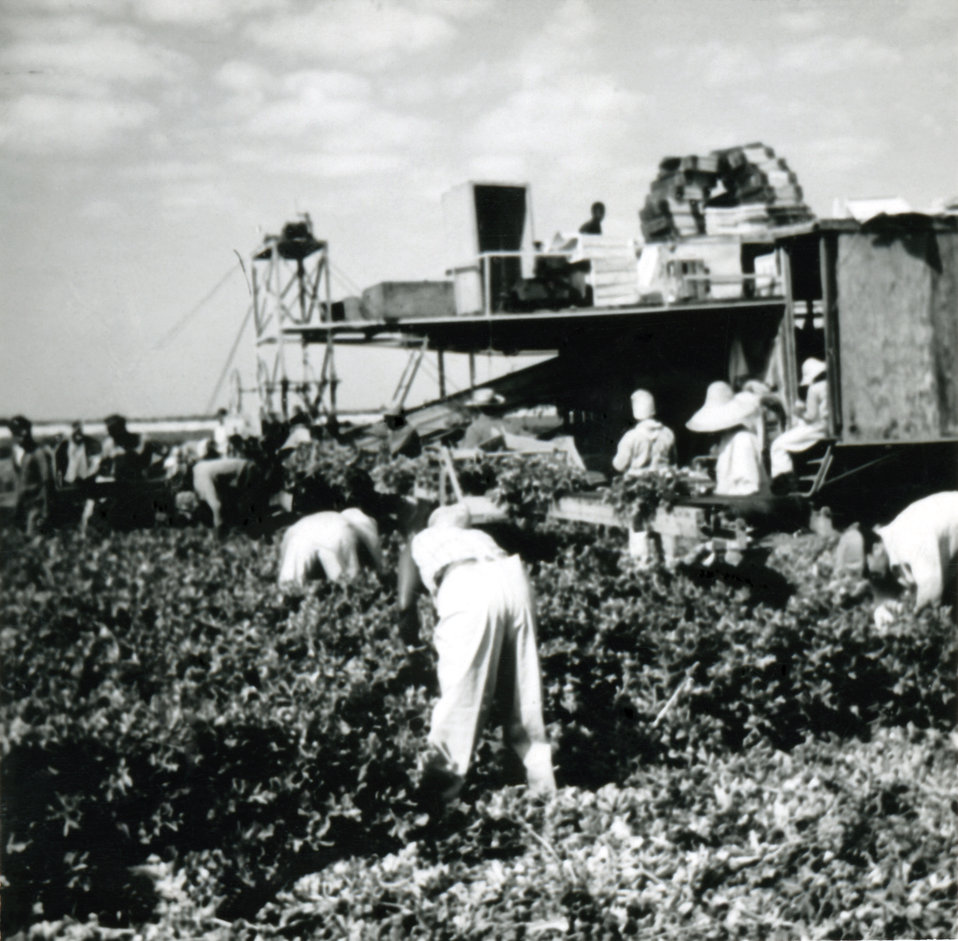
This 1950s historical photograph was provided by the Center for Disease Control's (CDC), National Institute for Occupational Safety and Health (NIOSH), and it depicted migrant field workers who were harvesting produce of an unknown crop. This type of physical labor is obviously rife with the potential for health hazards, including pesticide poisoning and overexposure. This realworld scenario emphasized the need for a regulating body, which would mandate business owners to adhere to protocols that made the workplace a safe environment in all forms of commerce. See PHIL 8989 for another view of this scene.